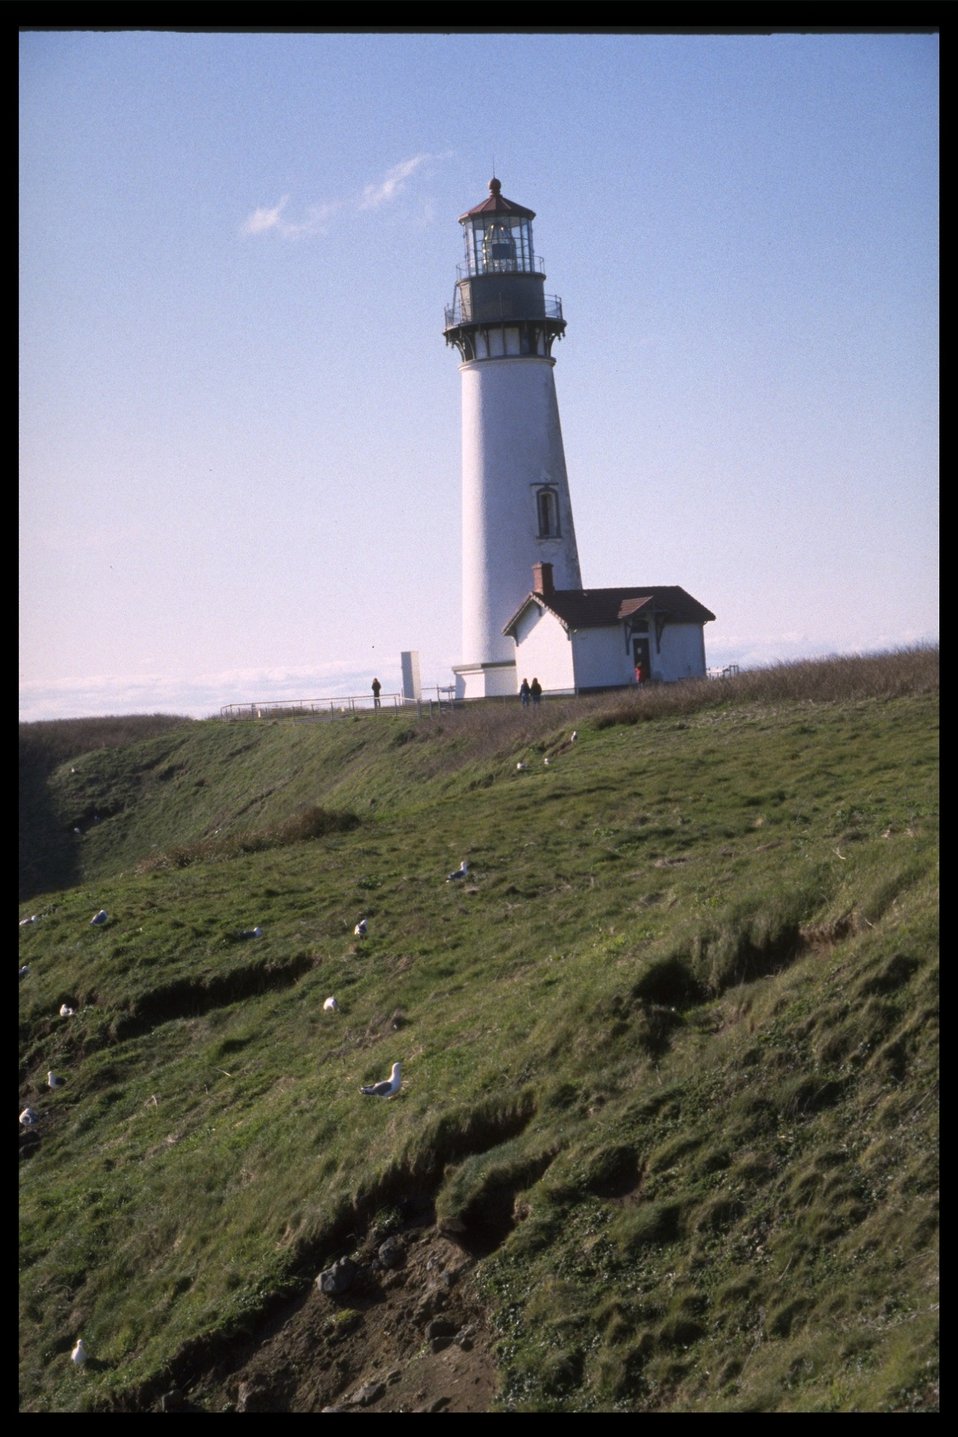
Yaquina Head Lighthouse.